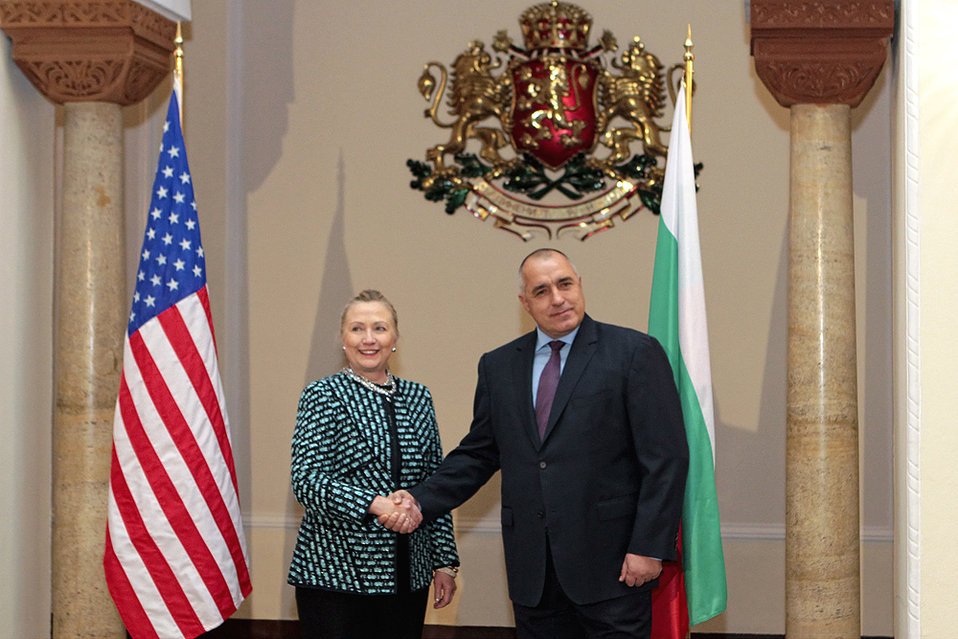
Secretary Clinton Shakes Hands With Bulgarian Prime Minister Borissov

U.S. Secretary of State Hillary Rodham Clinton shakes hands with Bulgarian Prime Minister Boyko Borissov at the Council of Ministers in Sofia, Bulgaria, on February 5, 2012.